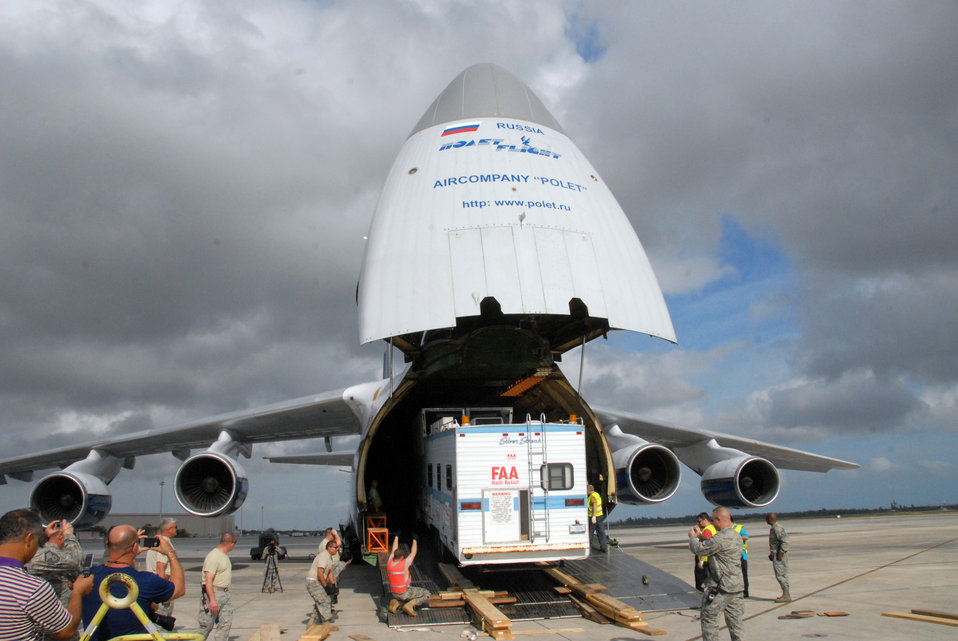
Air Force, FAA use Russian aircraft to move mobile air traffic control towel

A mobile air traffic control tower is loaded onto a Russian Antonov An-124 cargo plane at Homestead Air Reserve Base, Fla., Jan. 21, 2010. The mobile air traffic control tower will increase the efficiency of aid being delivered to earthquake victims in Haiti.